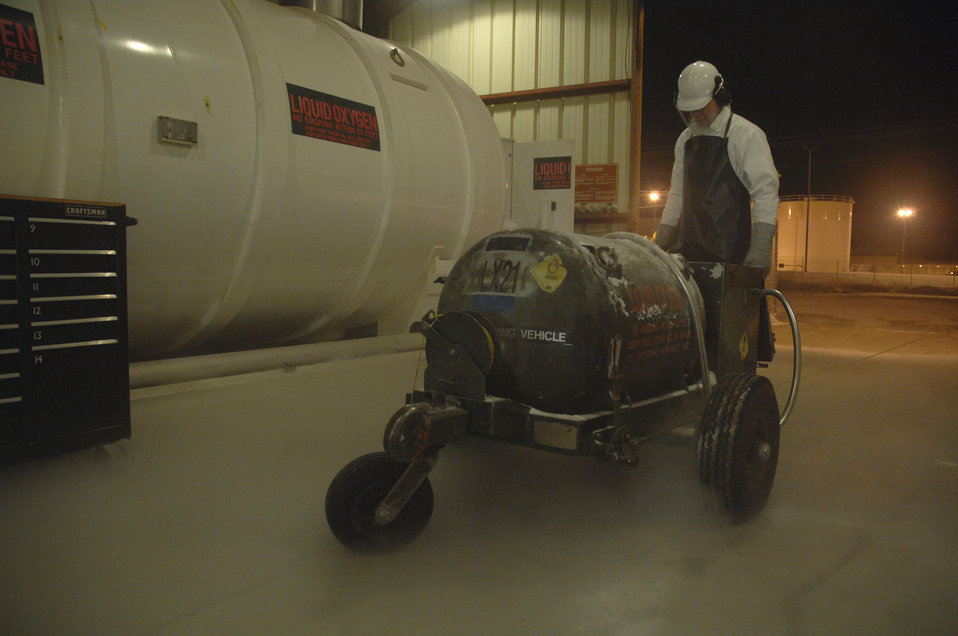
Cyrogenics is a cold business

Airman 1st Class Andrew Tuttle, 354th Logistics Readiness Squadron, fills a Liquid Oxygen (LOX) cart here Dec 20. The plume is the result of burnoff and the extremely low boiling point of the LOX. The LOX is used in aircraft as the breathing oxygen for pilots. It is run through an odor particulate sample before every cart is filled to ensure the pilots only receive good oxygen.